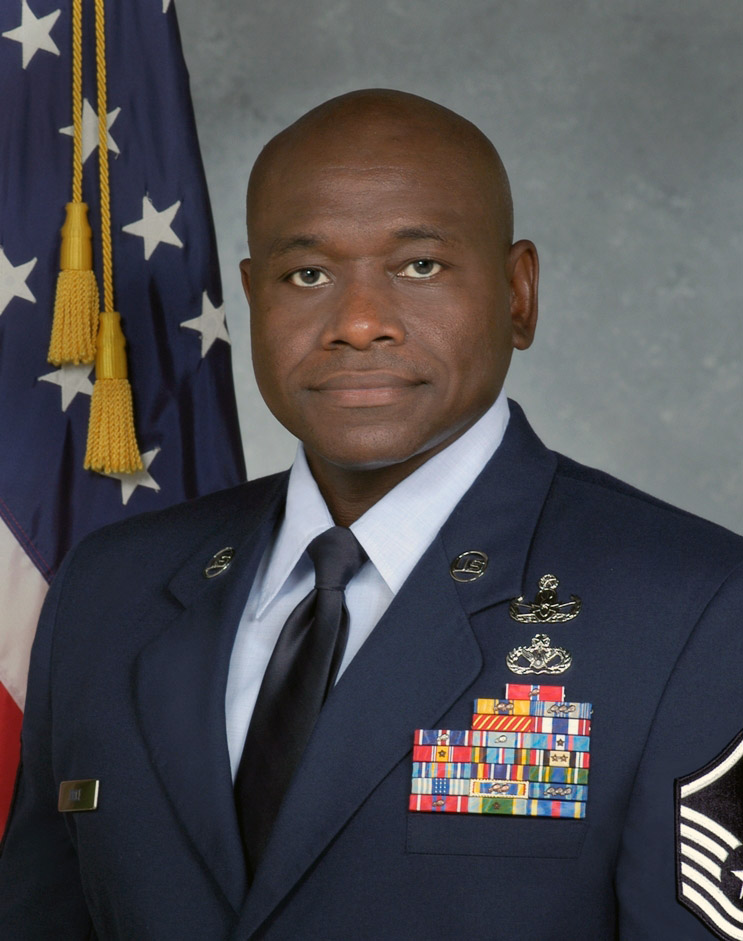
Air Force officials honor 12 Outstanding Airmen of the Year

Master Sgt. George Price Jr. from Patrick AFB, Fla., is one of the 12 Outstanding Airmen for 2008.